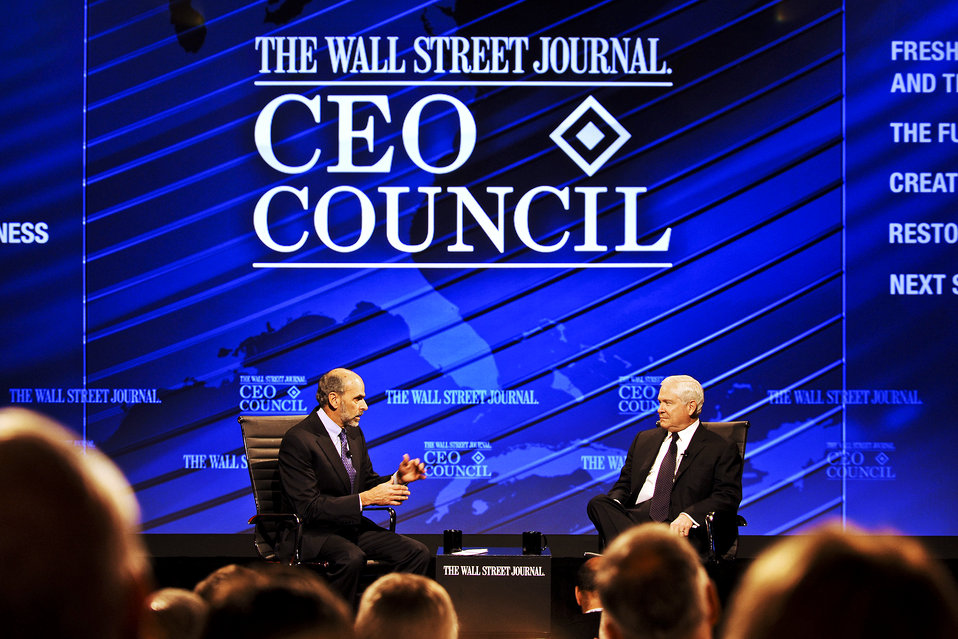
Gates cyber threats

Defense Secretary Robert M. Gates (right) answers questions from Gerald F. Seib, the Wall Street Journal's executive Washington editor, before a large audience at the newspaper's CEO Council Nov. 16, 2010, in Washington, D.C. The interview focused on upcoming budget cuts within the department. Mr. Seib also is the Wall Street Journal's assistant managing editor.